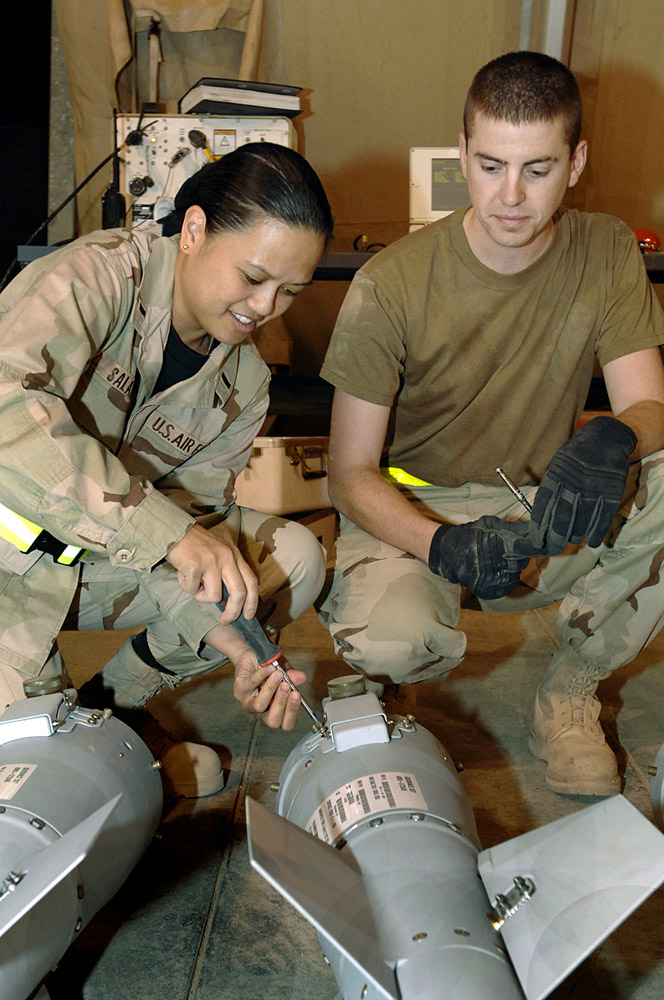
Operation Iraqi Freedom

1st Lt. Roseline Salazar and Staff Sgt. Philip Krug work on a tail fin assembly before assembling a joint direct attack munition at Balad Air Base, Iraq, Oct. 9, 2005. Both Airmen are assigned to the 322nd Expeditionary Maintenance Squadron and deployed from Aviano Air Base, Italy.